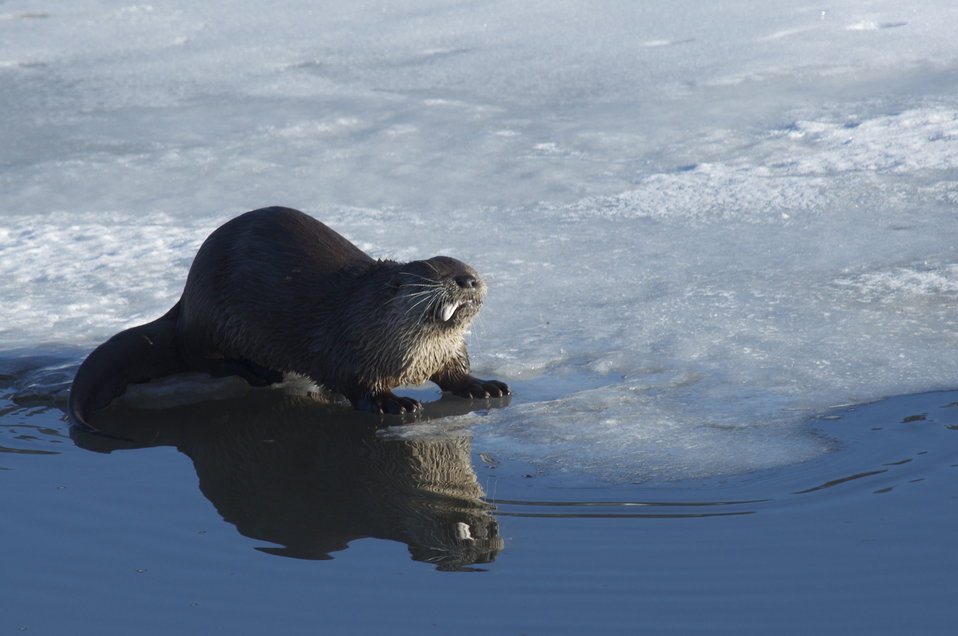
Dinner on Flat Creek

An otter enjoys a fish dinner along Flat Creek on the National Elk Refuge.

Credit: USFWS / Mike Nordell, NER winter naturalist